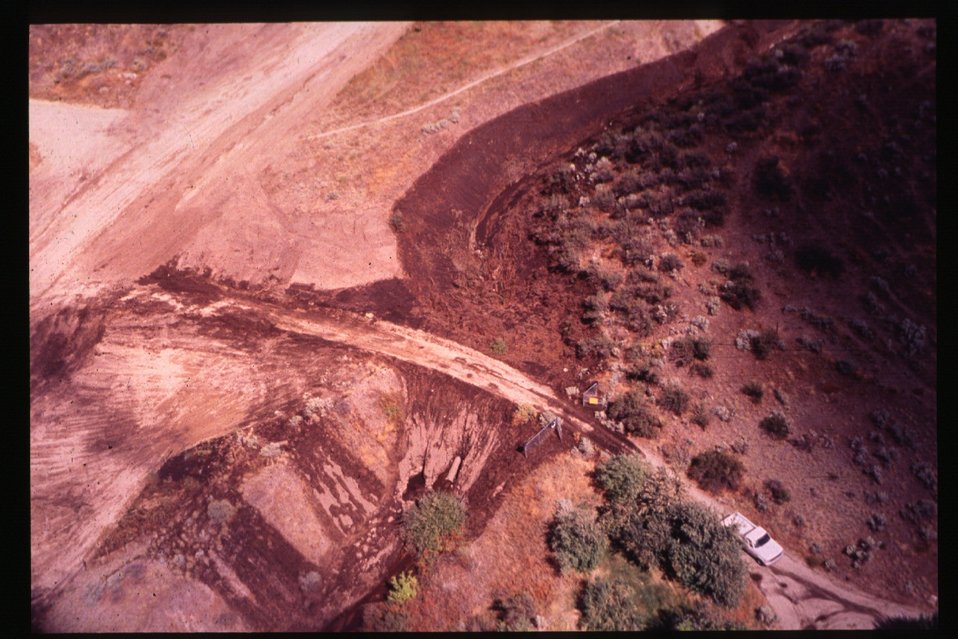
8th Street Fire Four Rivers Field Office LSRD Lower Snake River District